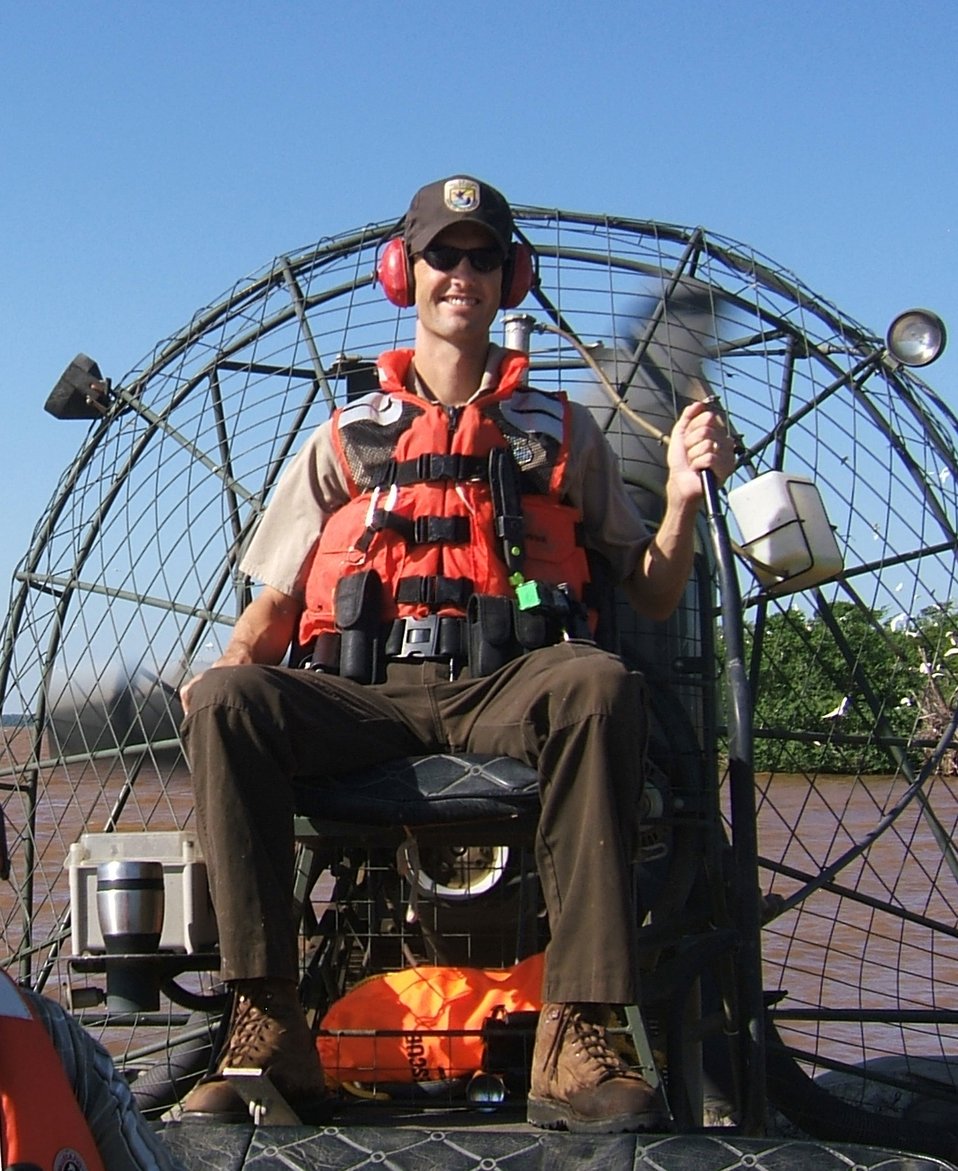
Shelby Finney at Salt Plains NWR

National Wildlife Refuge System Law Enforcement Officer Shelby Finney operates an airboat at Salt Plains National Wildlife Refuge in Oklahoma. Finney was named 2011 Officer of the Year for the U.S. Fish and Wildlife Service’s Southwest Region. (USFWS)